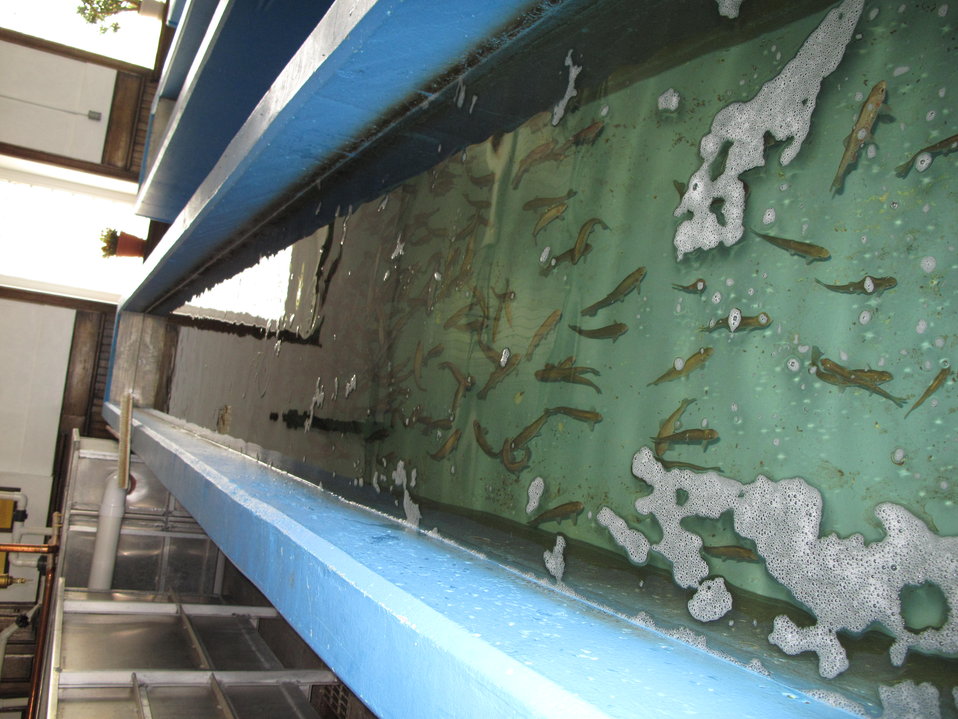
Leadville National Fish Hatchery

Two year-old greenback cutthroat trout